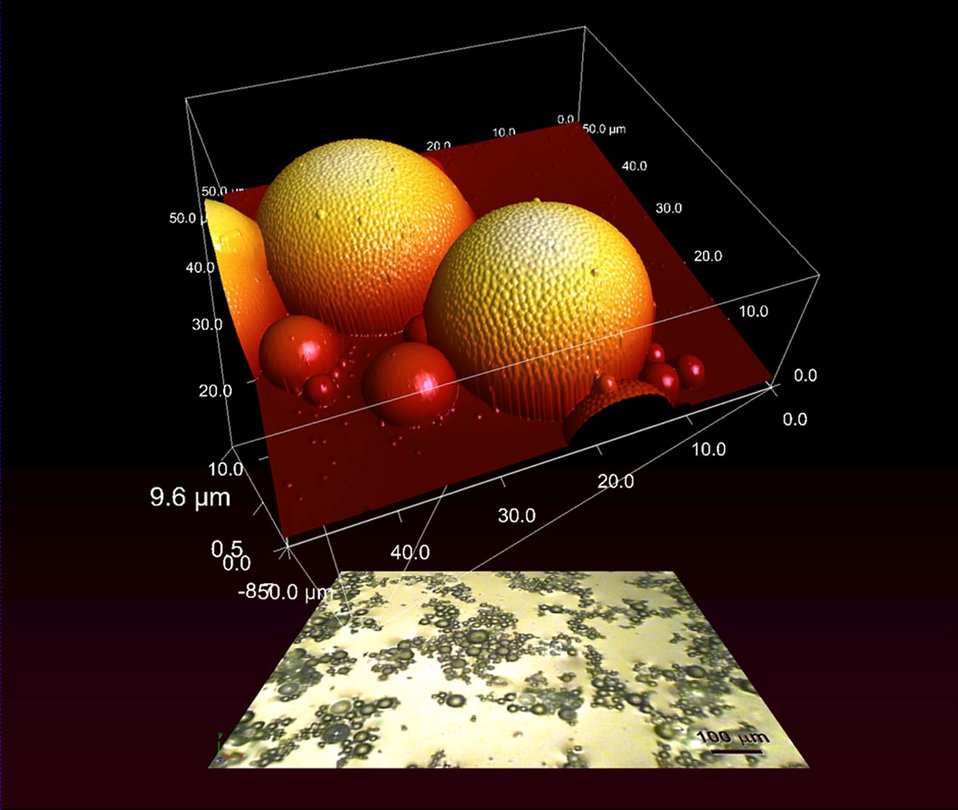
Fossilized Liquid Assembly, Nanomaterials Research Tool

Optical microscope image (lower plane) shows spheres at mutiple size scales self-arranging in complex 'super-assemblies' in NIST's hierarchical topology modeling system. Atomic-force microscopy (detail) shows the textured surface formed by the spheres.